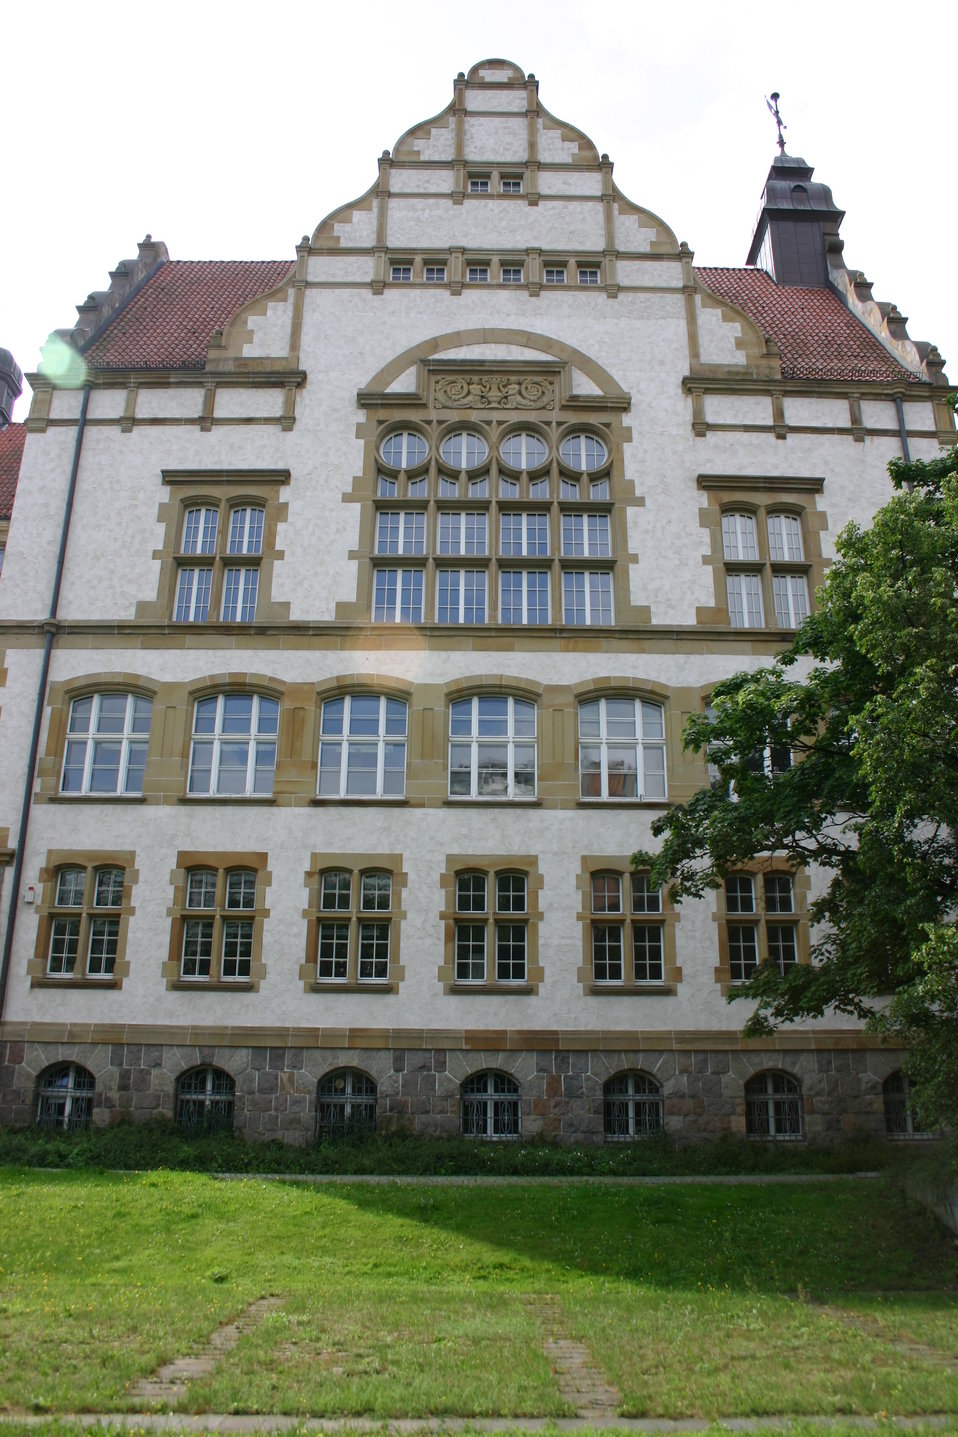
Deutsch: Karl-Liebknecht-Gymnasium in Frankfurt (Oder), Brandenburg, Deutschland Karl-Liebknecht-Gymnasium (secondary school or high school 'Karl Liebknecht') in Frankfurt (Oder), Brandenburg, Germany